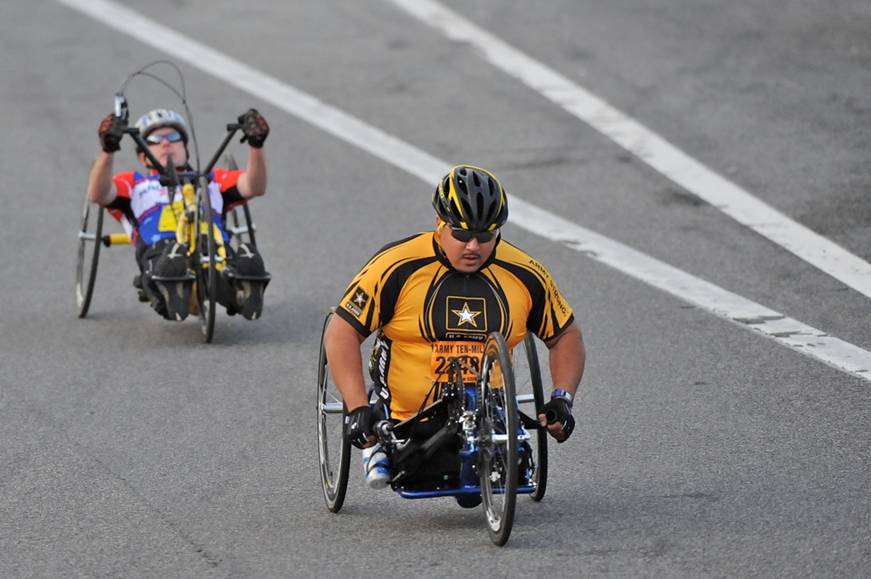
Joe Beimfohr, the Bureau Acquisition Career Coordinator, was in the Army from July 1995 to July 2006. He served in Korea and Iraq, and was stationed at Ft. Knox and Ft. Riley. He retired as a Staff Sergeant.